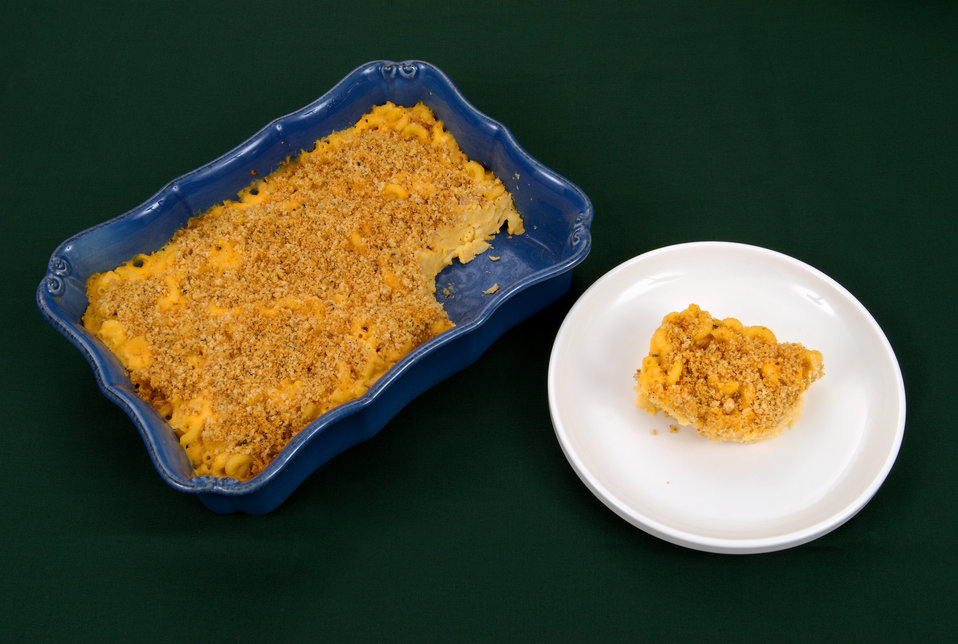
This photograph depicts a baking dish containing a traditional macaroni and cheese casserole with potato and a breadcrumb topping. The small plate holds a single serving of this dish. A healthier choice may have been made, which would have contained less fats and carbohydrates.